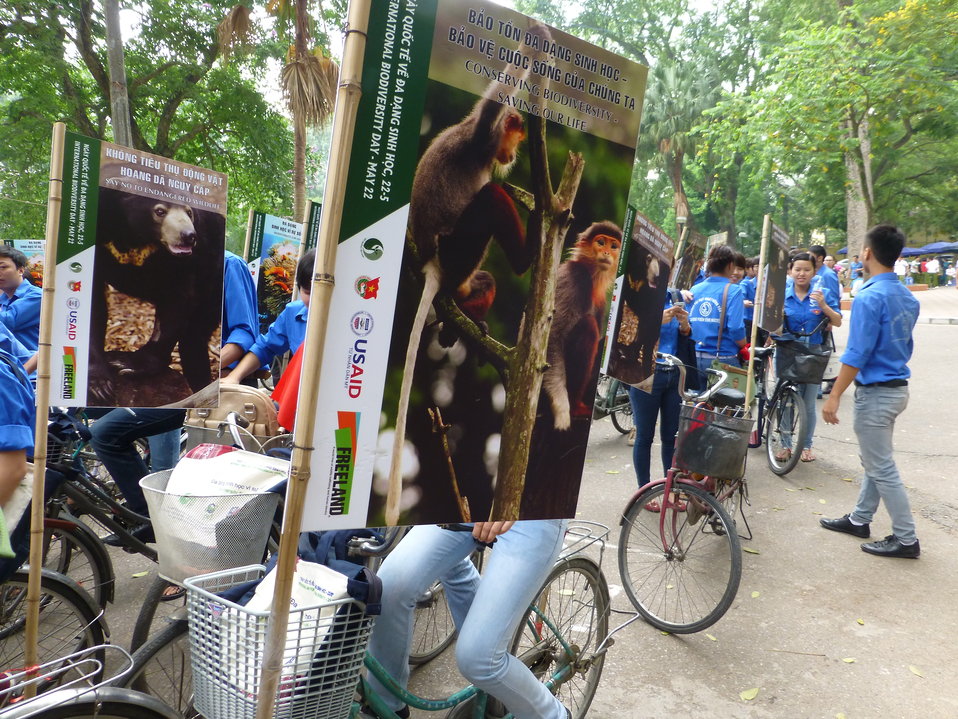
USAID Supports International Day for Biological Diversity in Hanoi